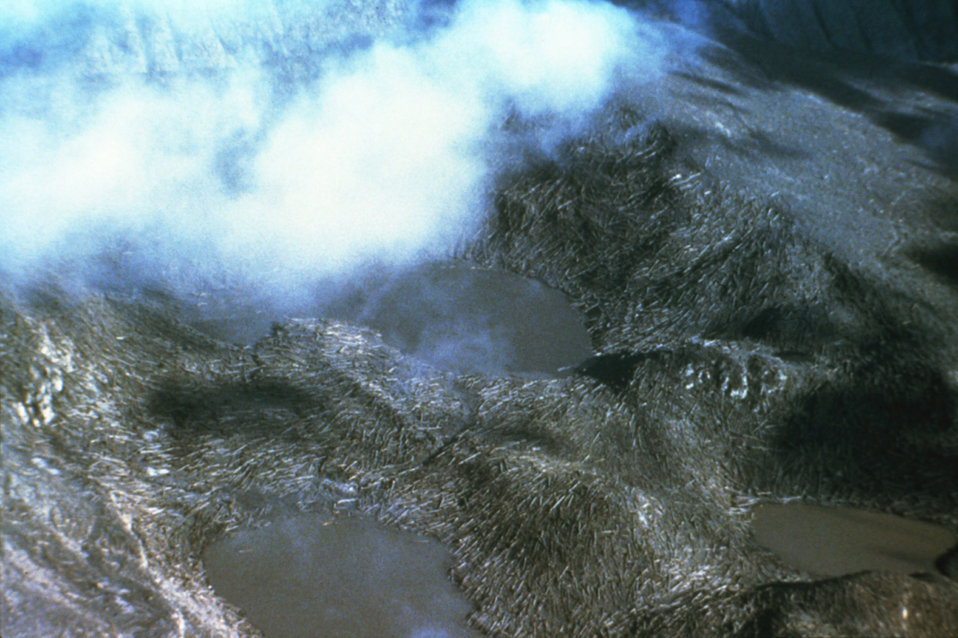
This 1981 aerial photograph was taken during a CDC investigation of the 1980, Mount St. Helens eruption.